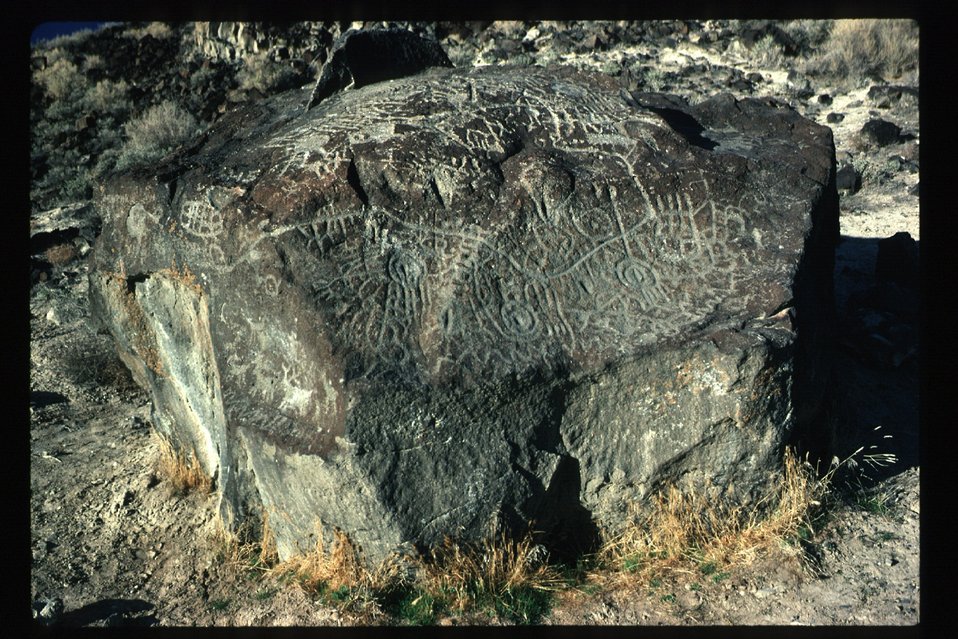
Map Rock Archeology LSRD Lower Snake River District